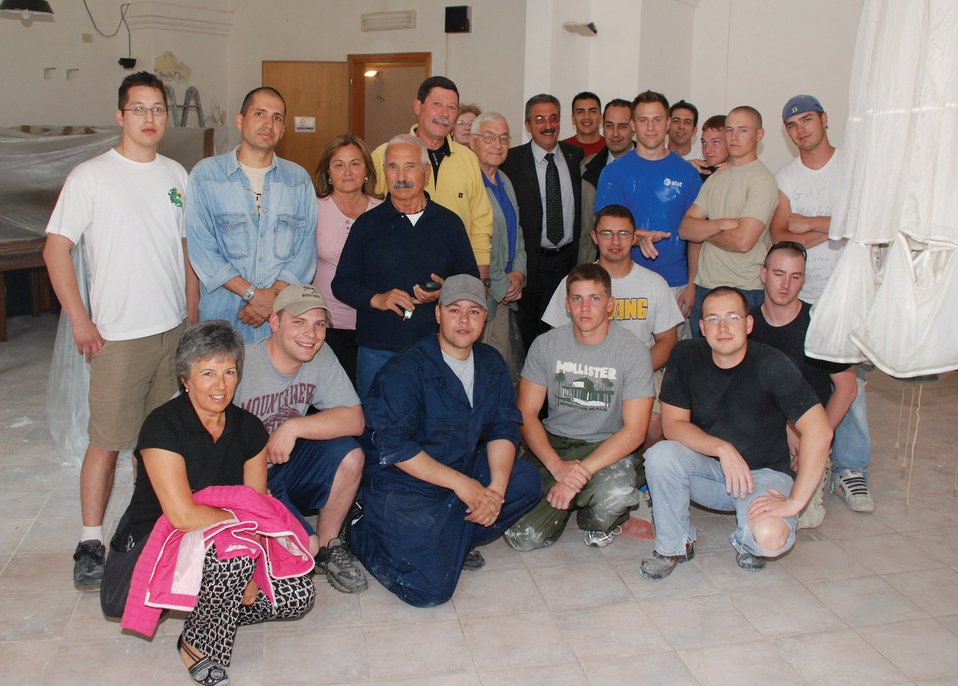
Camp Darby Airmen help Italian veterans

Airmen from the 31st Munitions Squadron at Camp Darby, Italy, and veterans of the Italian Folgore Parachutist Brigade take a break during the refurbishing of the Associazione Nazionale Paracadutisti D'Italia meeting hall in nearby Livorno.